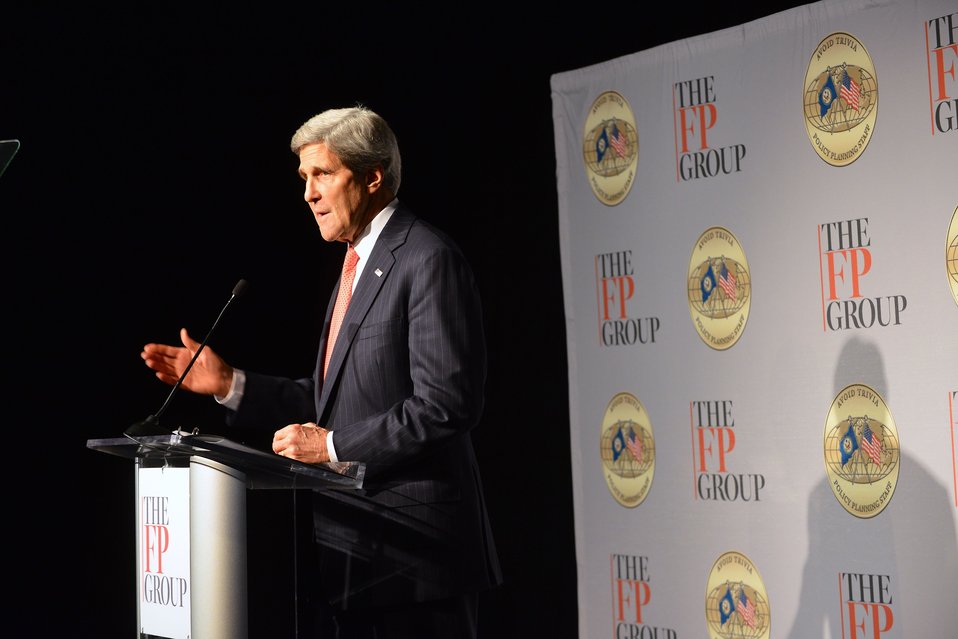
Secretary Kerry Delivers Remarks at the Transformational Trends Strategic Forum

U.S. Secretary of State John Kerry delivers remarks at the Transformational Trends Strategic Forum in Washington, D.C., on December 11, 2013.